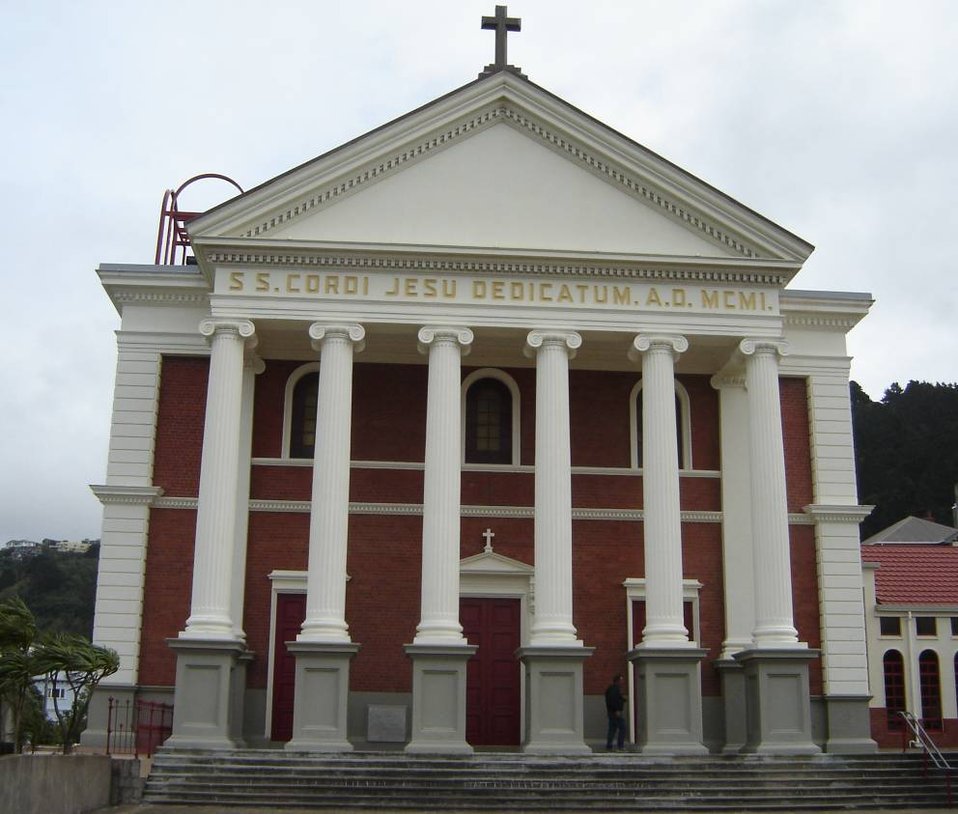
Cathedral of the Sacred Heart, Wellington, New Zealand. New Zealand Historic Places Trust Register number: 214.